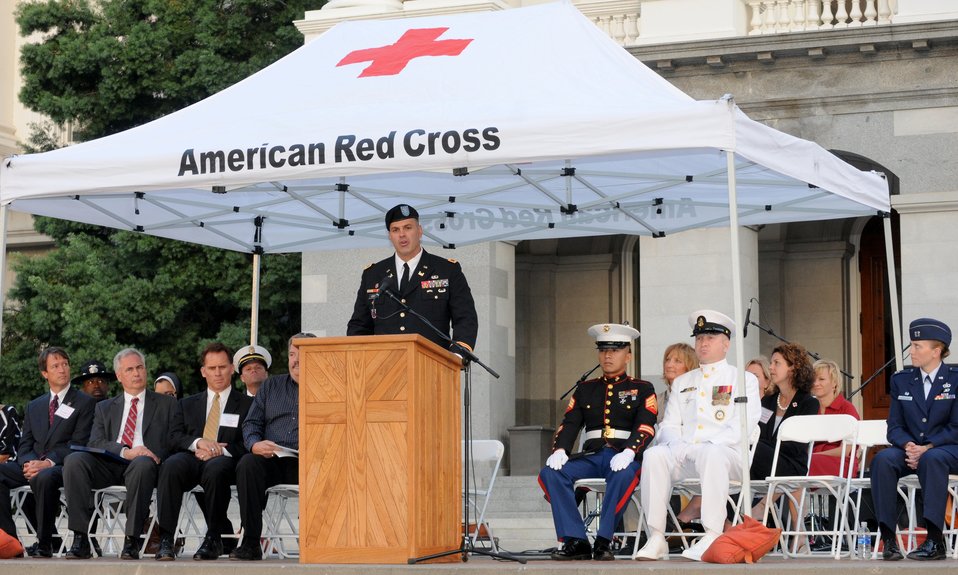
Colonel Bill Leady gives tribute

Representing the U.S. Army, Col. Bill Leady (center), commander of the U.S. Army Corps of Engineers Sacramento District, gave tribute to the nearly three thousand lives lost in the attacks of September 11, 2001, during a tenth anniversary vigil at the steps of the California State Capitol in Sacramento, Calif.

“Today is a chance to honor those who died that day, and those who’ve died since in defense of our freedoms,” Leady said. “September 11th certainly had a significant impact on my life – and the lives of every man and woman who has since been a member of the U.S. military, including their family members.”

The event was hosted by Volunteers in Victim Assistance, a full service center headquartered in Sacramento for victims, witnesses, friends and family members who have experienced a violent crime or trauma.